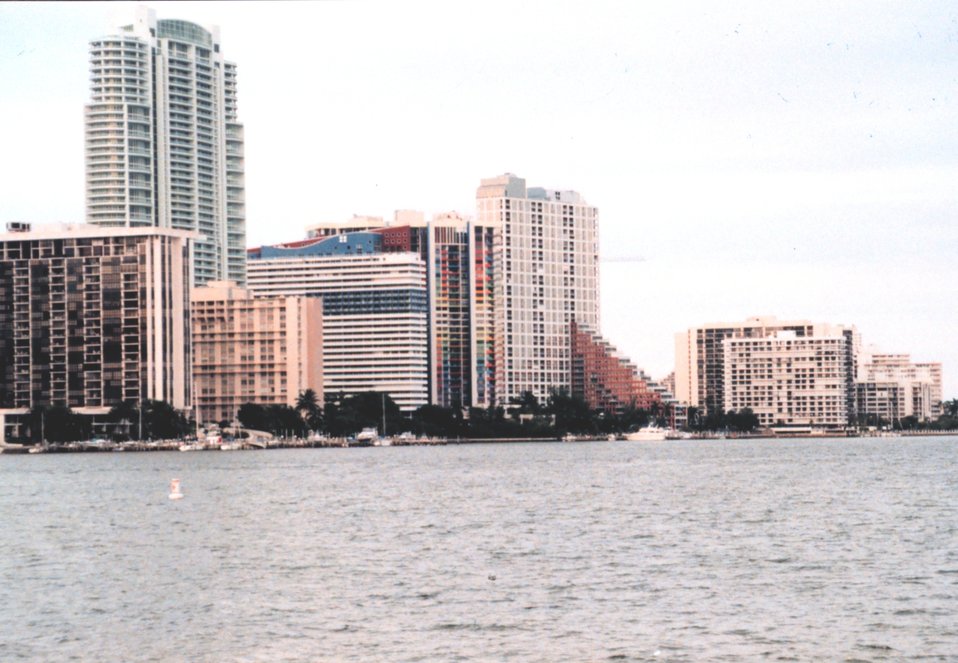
Miami skyline